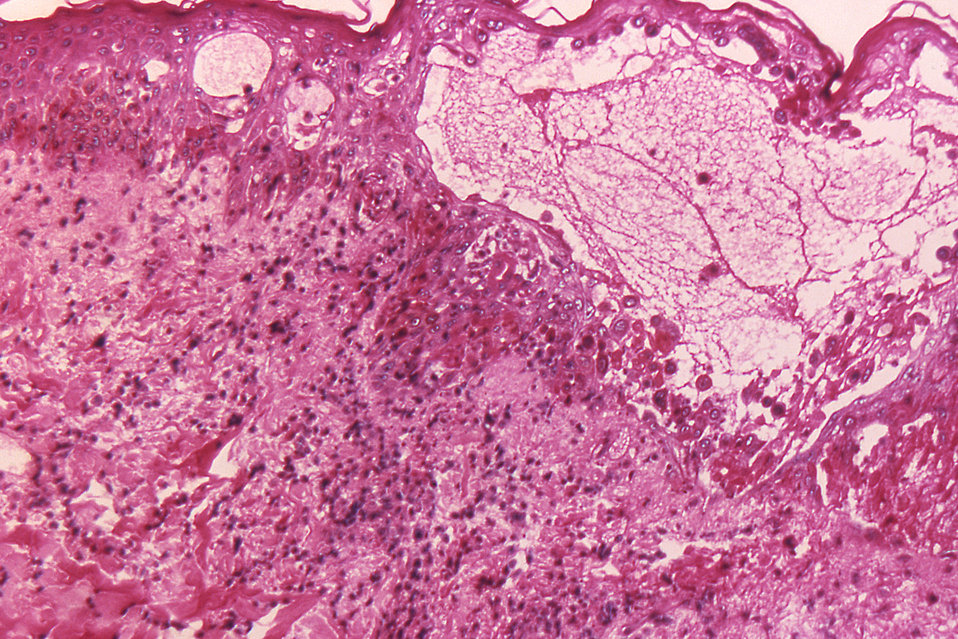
Under a magnification of 125X, this hematoxylin-eosin (H&E)-stained photomicrograph reveals some of the cytoarchitectural histopathologic changes which you'd find in a human skin tissue specimen that included a chickenpox, or varicella zoster virus lesion.